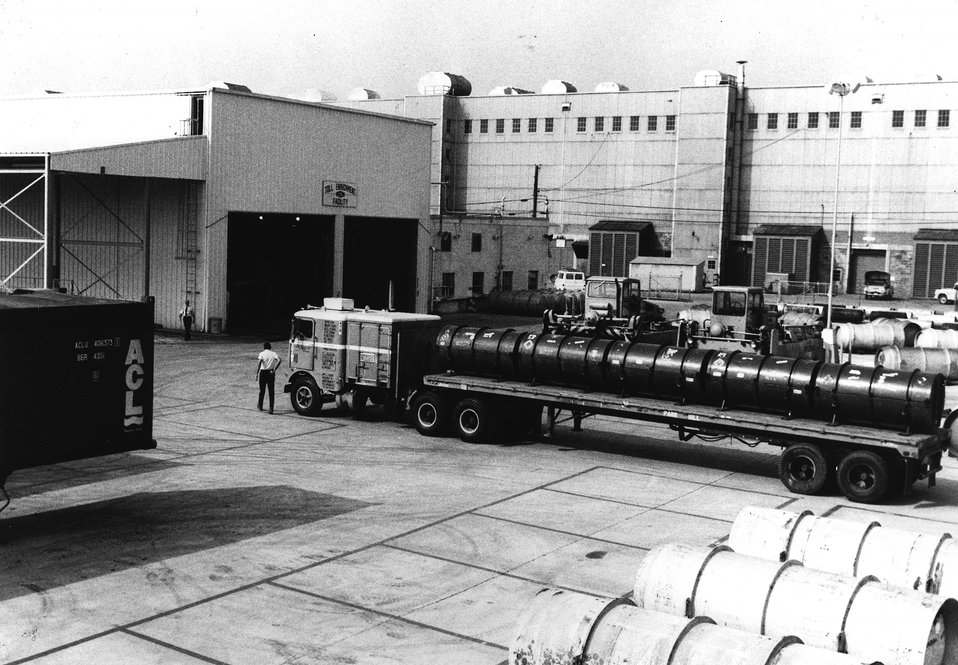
A tractor-trailer prepares to leave the toll enrichment facility at the Oak Ridge Gaseous Diffusion Plant in Tennessee. c. 1974